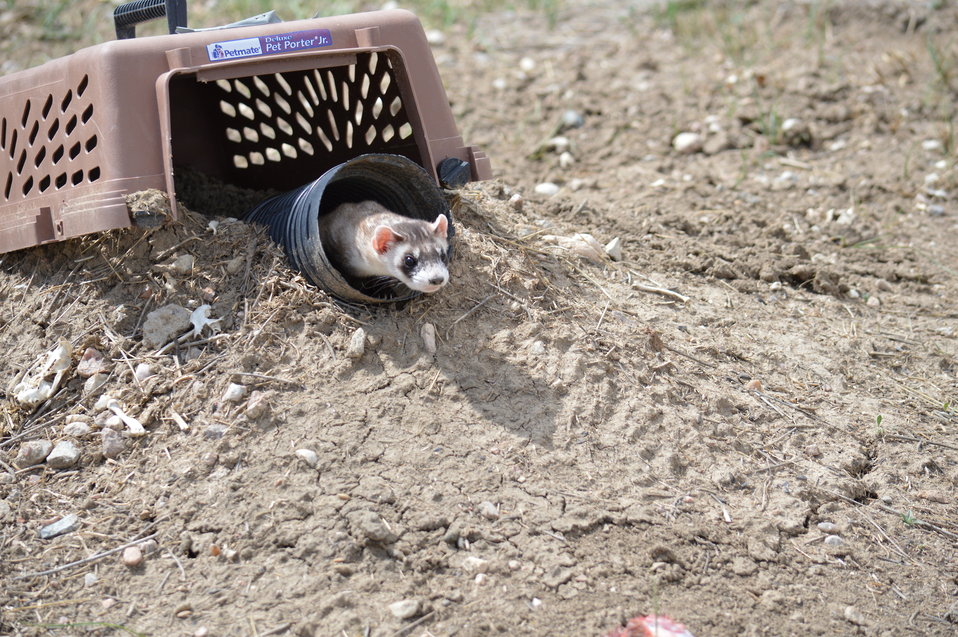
Interns visit the NBFFCC

In the summer of 2012, USFWS Region 6 interns visited the National Black-footed Ferret Conservation Center (NBFFCC) in Colorado to learn how the program reintroduces the endangered Black-footed ferret back into its native habitat.